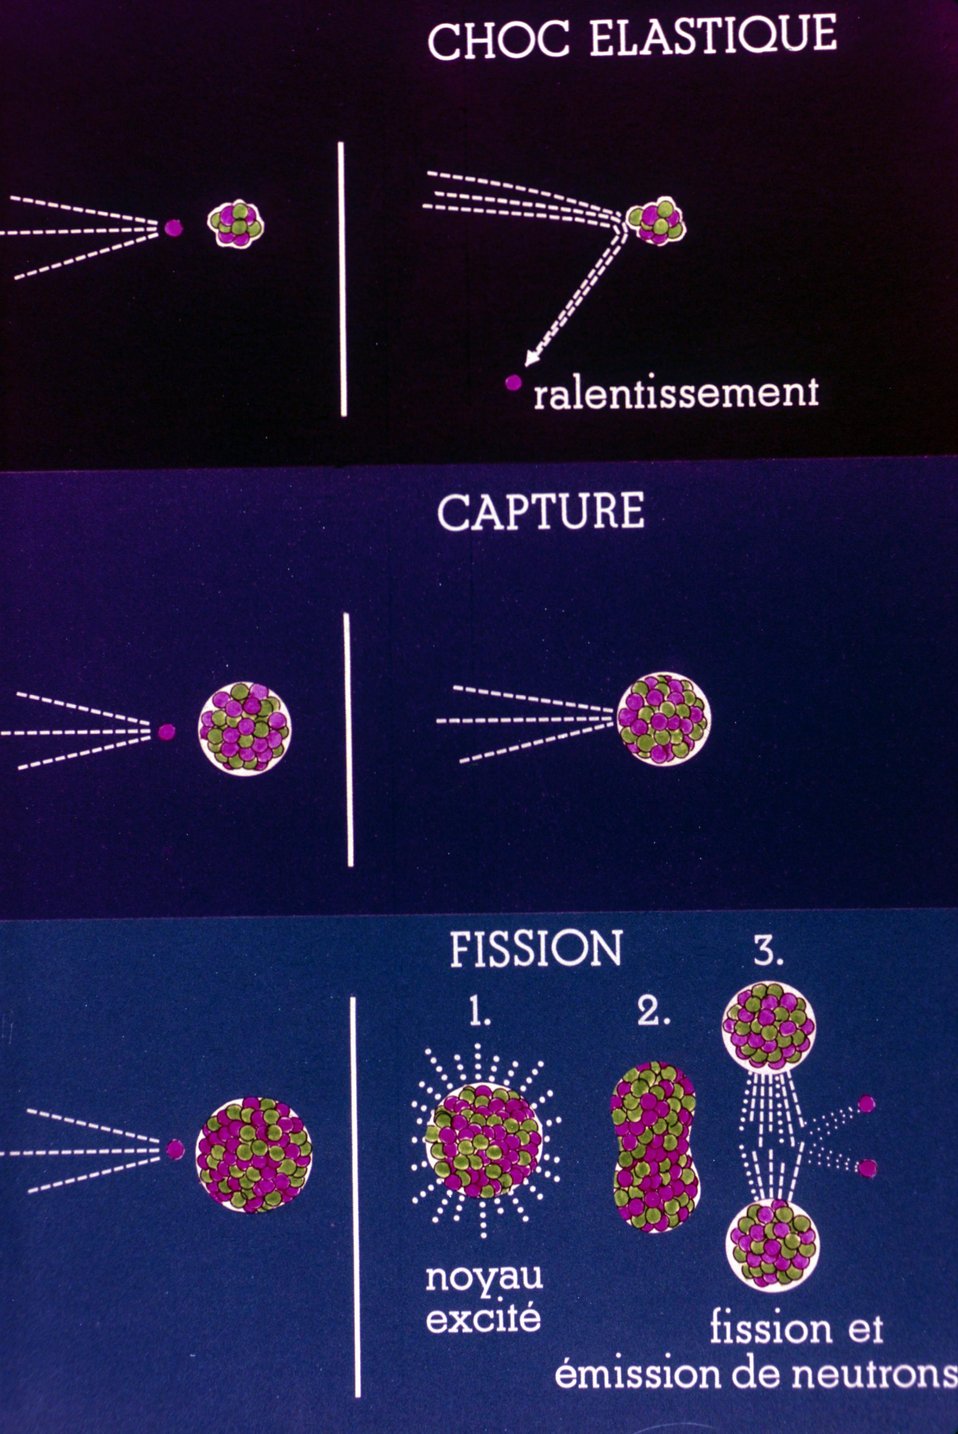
Choc, capture et fission.